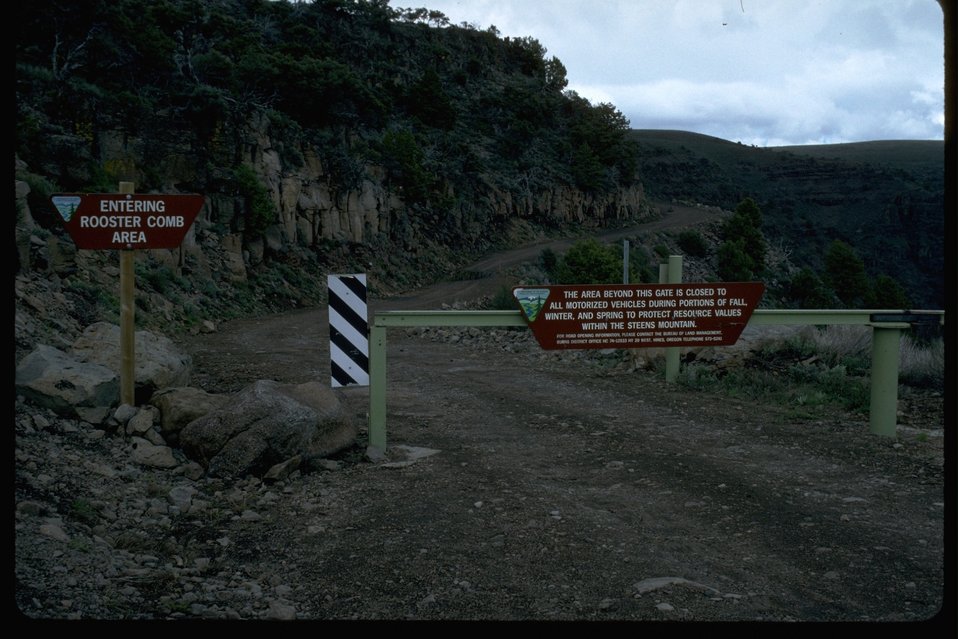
Locked gate along a back country byway at Big Indian Gorge Overlook.